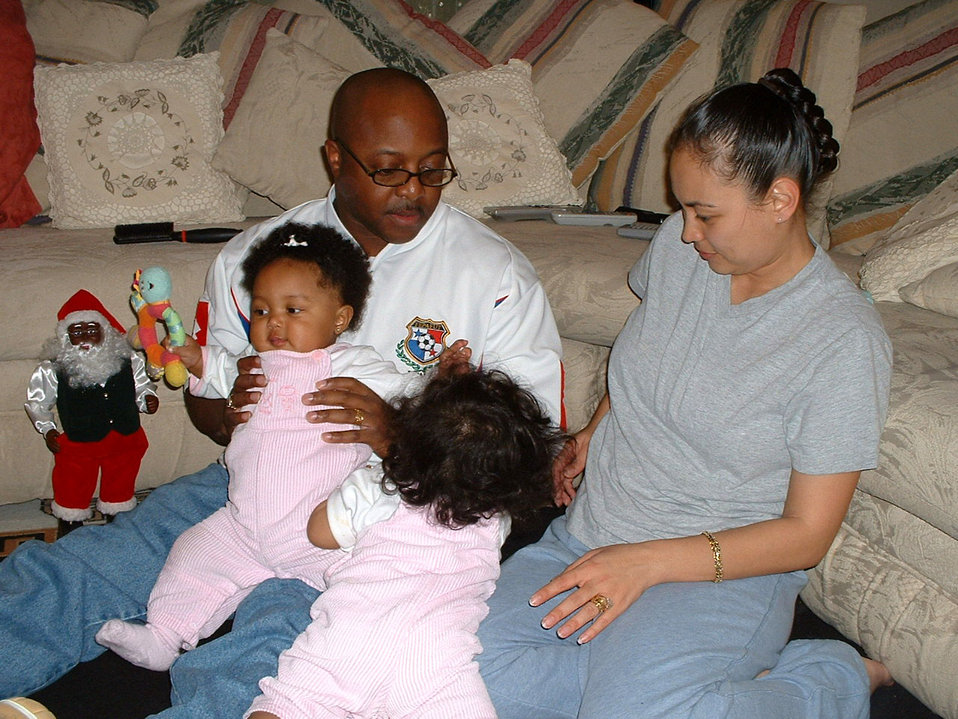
Serving through the season: Tech. Sgts. Fernando and Flor Richards

Tech. Sgts. Flor and Fernando Richards tend to their 10-month-old twin daughters. The couple keeps busy during the holidays by doing things as a family and starting new holiday traditions with their daughters.